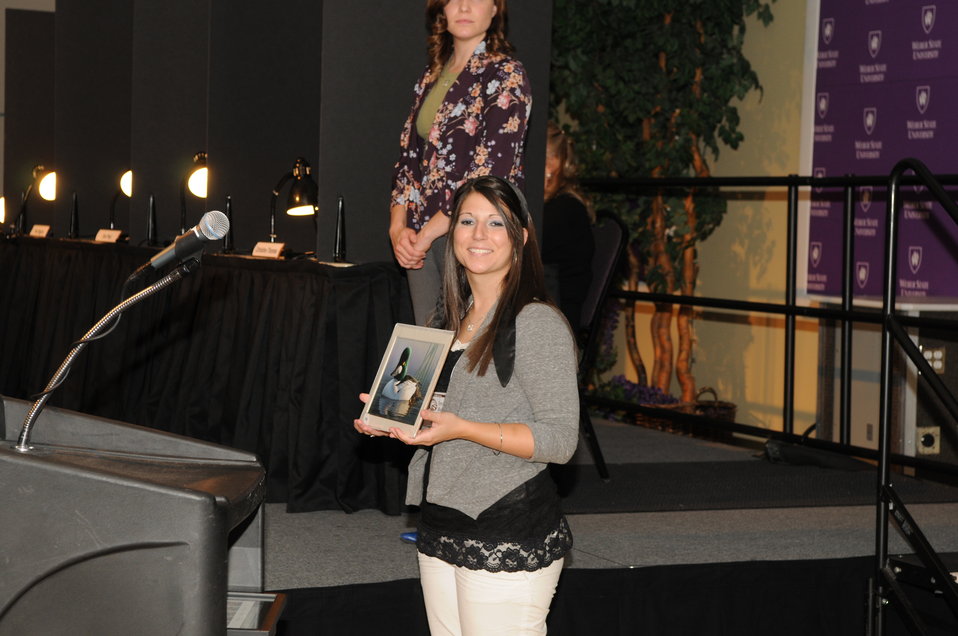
Artwork Presenter

The U.S. Fish & Wildlife Service sponsored the 2012 Federal Duck Stamp Art Contest September 28 and 29 in Ogden, Utah, at Weber State University. A panel of five judges was responsible for choosing the art work used to design the 2013-2014 Migratory Bird Hunting and Conservation Stamp.